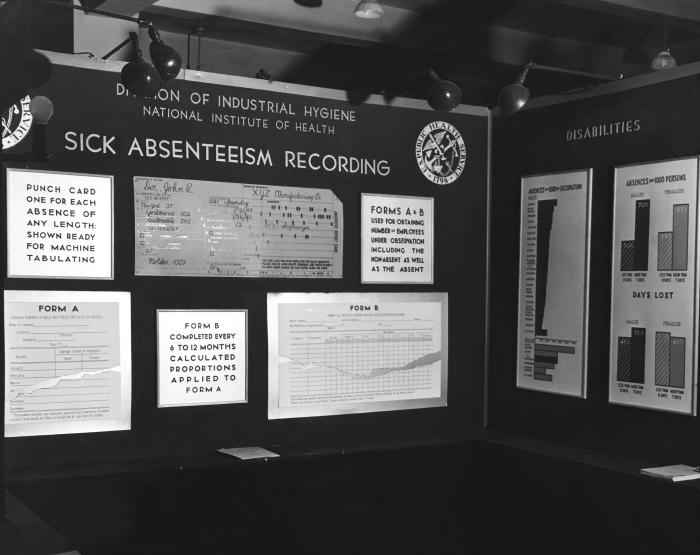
Provided by the Center for Disease Control's (CDC), National Institute for Occupational Safety and Health (NIOSH), this historic image depicted an exhibit produced by the National Institute of Health (NIH), Division of Industrial Hygiene entitled, 'Sick Absenteeism Recording' which was being displayed at an American Medical Association (AMA) June, 1940 New York meeting. See PHIL 9715 for another view of this exhibit.